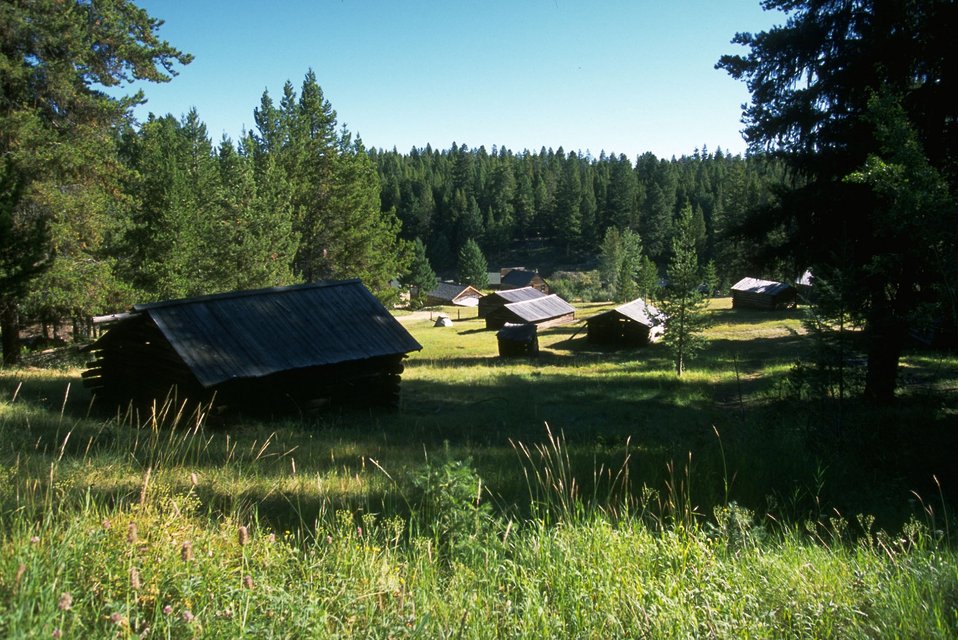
Garnet Ghost Town residential cabins